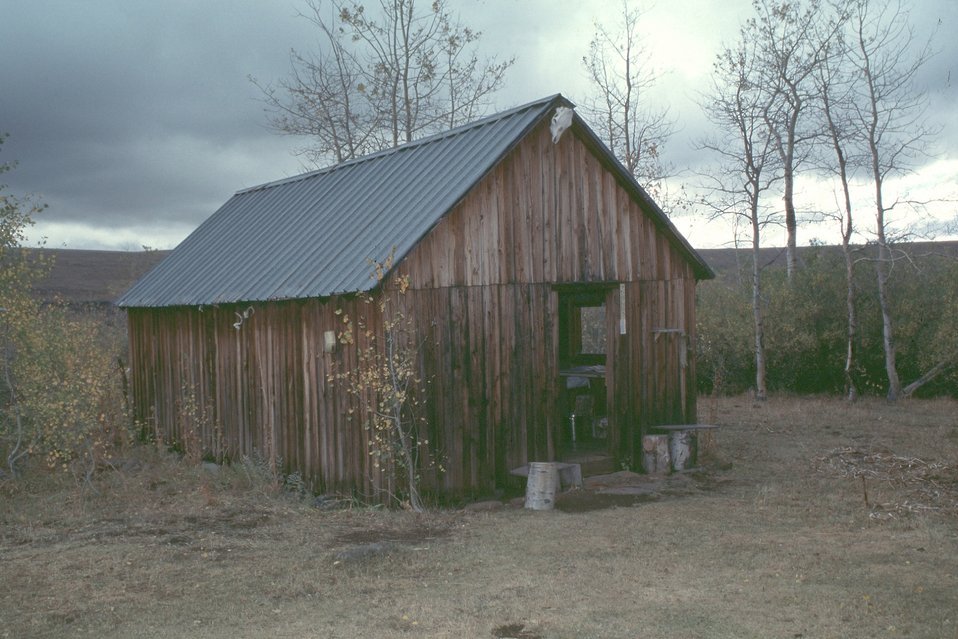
Nye Cabin with a skull south side of the road looking east.